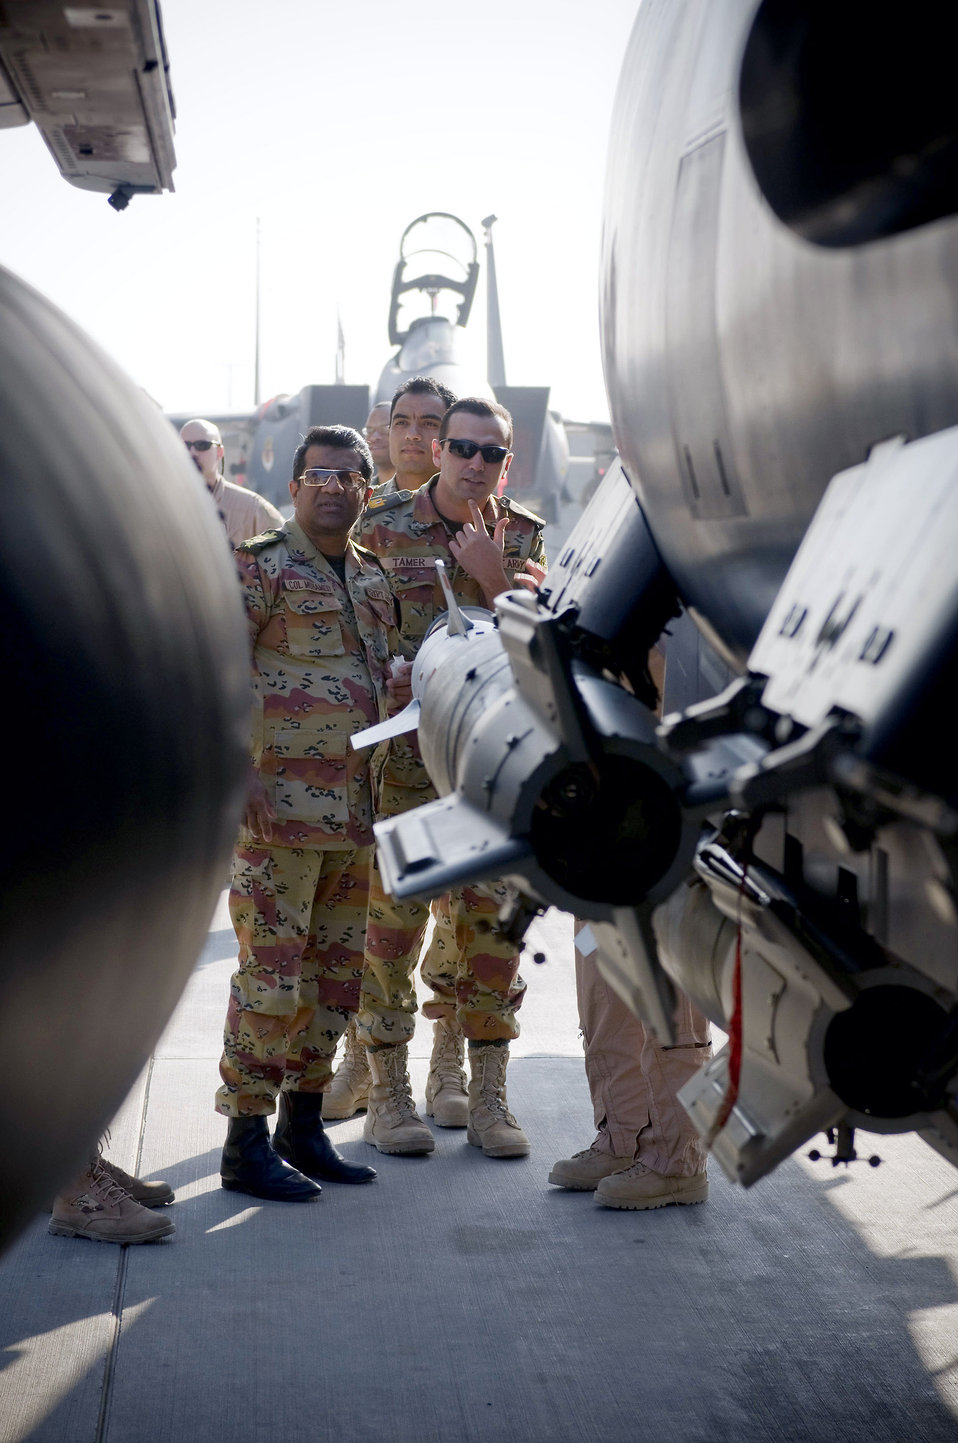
Egyptians learn airpower

Egyptian medical personnel tour an F-15E Strike Eagle at Bagram Airfield, Afghanistan, Nov. 29. The Egyptians wanted to learn about the fighter aircraft from the 455th Air Expeditionary Wing and their role in Operation Enduring Freedom.